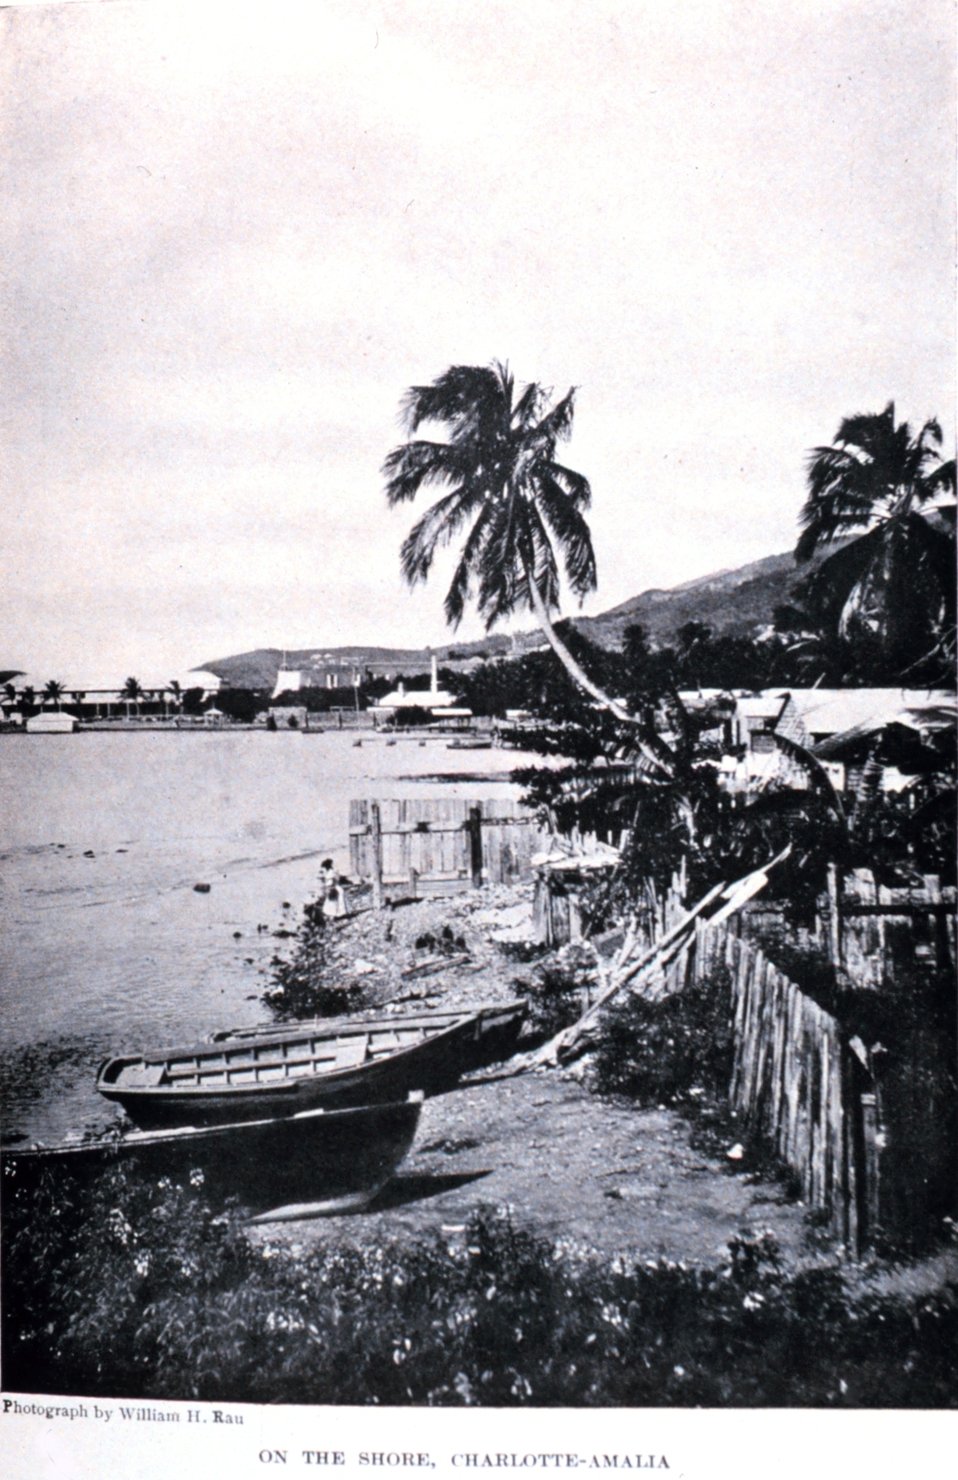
'On the Shore, Charlotte-Amalia.' In: 'The Virgin Islands Our New Possessions and the British Islands', by Theodoor De Booy and John T. Faris, 1918. J. B. Lippincott and Company, Philadelphia. P. 266. Library Call Number C/hc100 V81 B.